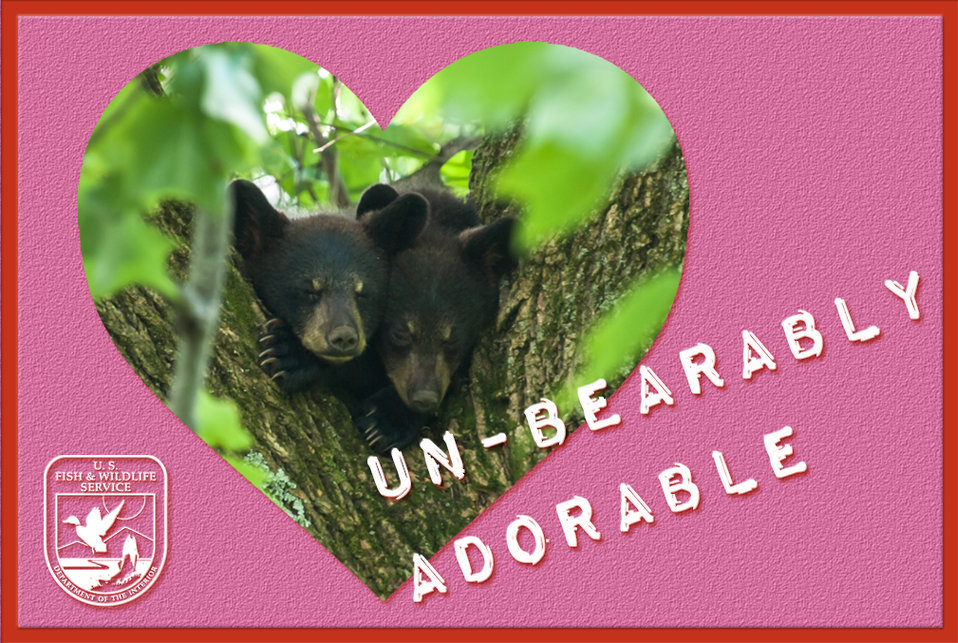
Photo of the Week - Black bear cubs (VA)

Photo of the week - 2/10/14

Happy Valentine's Day. Black bear cubs at Shenandoah National Park in Virginia. Explore public lands this weekend! Find a national wildlife refuge near you at www.fws.gov/refuges

www.fws.gov/northeast

Credit;
Original bear photo: Lamar Gore/USFWS
Valentine meme: Keith Shannon/USFWS